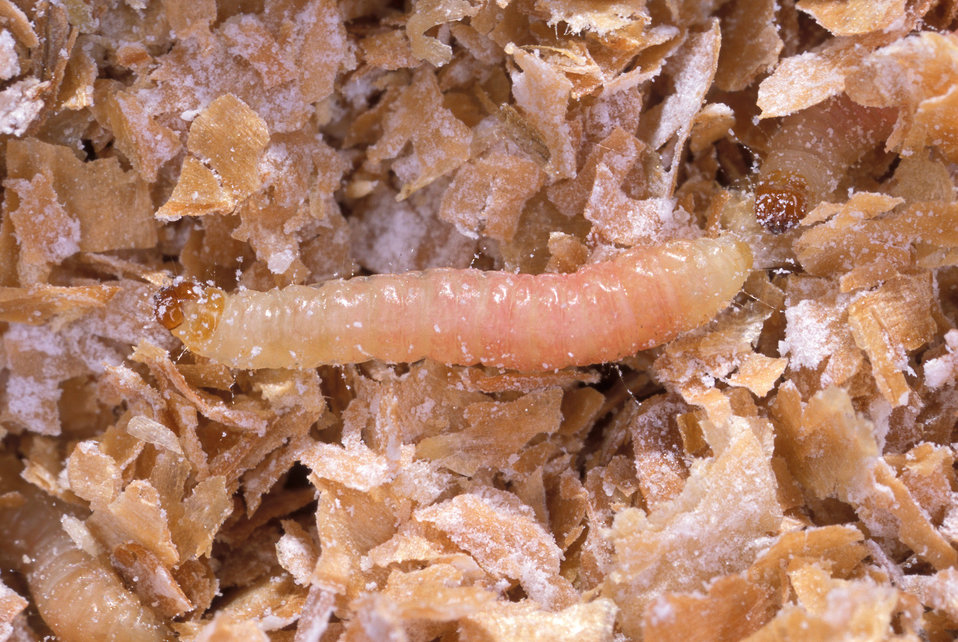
Indianmeal moth larva (Plodia interpunctella) searches for food. Indianmeal moths are a common grain-feeding pest found around the world, feeding on cereals and similar products.